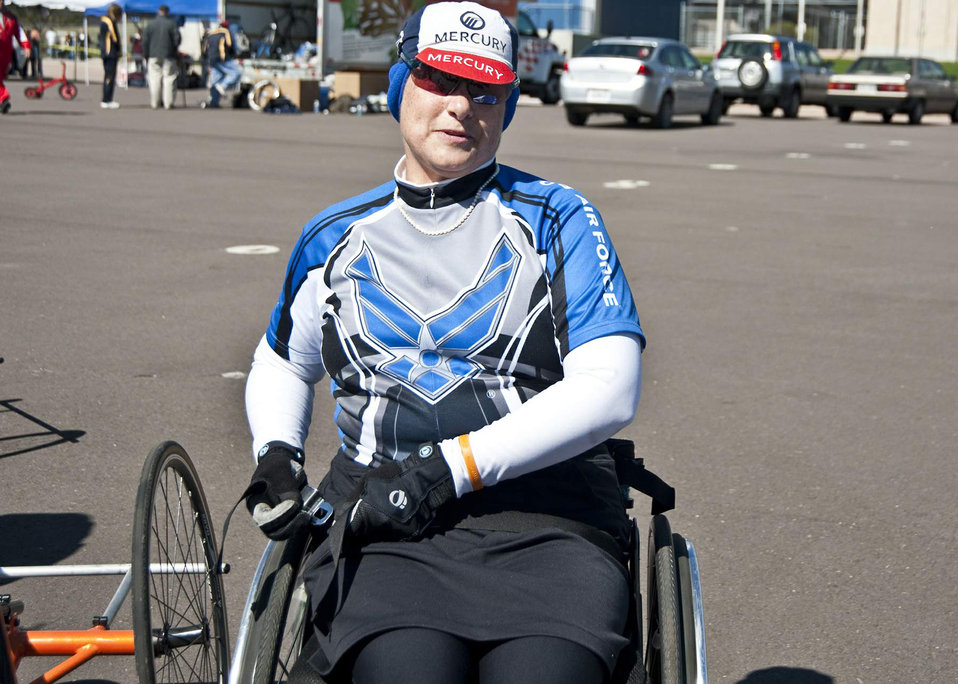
Warrior Games cycling